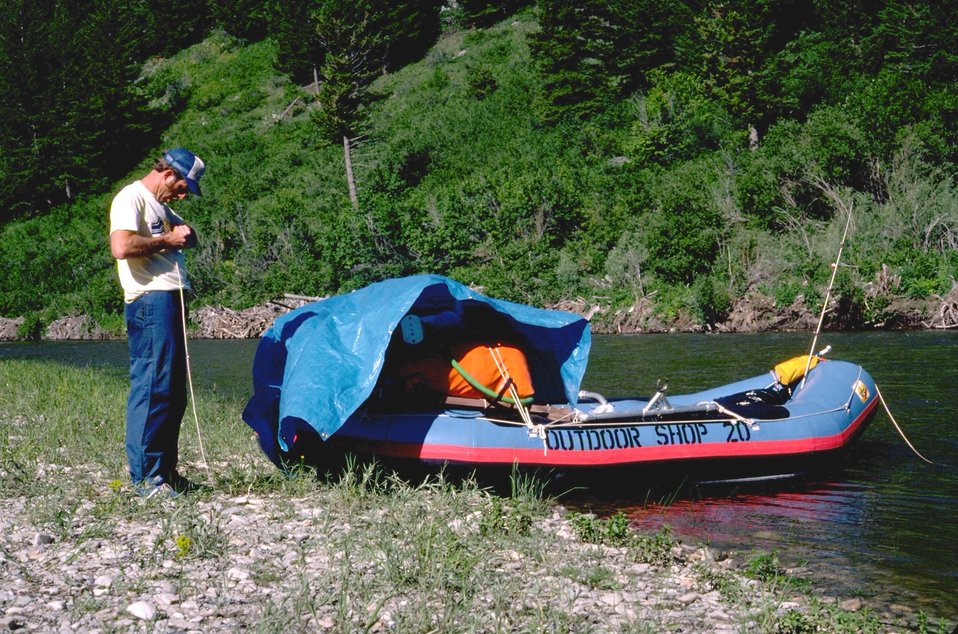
Raft on river